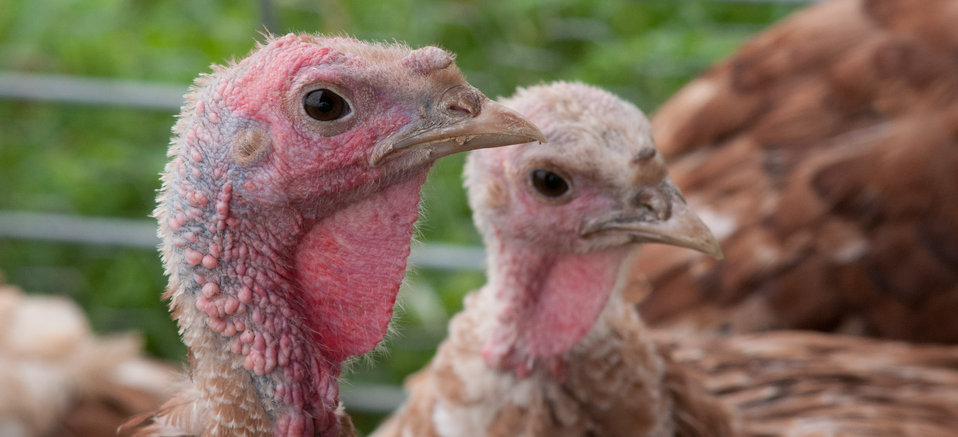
Broiler turkeys graze on organic pastures and live in pens that protect them from predators, direct sun light, and wind at Nick’s Organic Farm, owned by Nick Maravell in Adamstown, MD on Friday, July 12, 2013. The enclosures are light enough to be moved by hand, each day, one consecutive section at a time. This allows the pasture to easily recover from the grazing. The farm produces Black Angus beef, chicken, turkey, eggs, hay, soybeans, corn, alfalfa, orchard grass, rye; and other crops. The cattle are100% grass-fed receiving certified organic pasture, certified organic hay (in winter), water and mineral salts mixed with sea kelp. The cattle are not fed hormones, antibiotics or animal products. Poultry feed from grain is ground from organic grain. The poultry also graze on organic pastures. The farm has conducted on-farm research with federal, state and non-profit agencies to refine organic practices. An organization such as the U.S. Department of Agriculture (USDA) Agricultural Research Service (ARS) center in Beltsville has been able to conduct research to improve organic crops and to breed and manage the cattle so that they have.